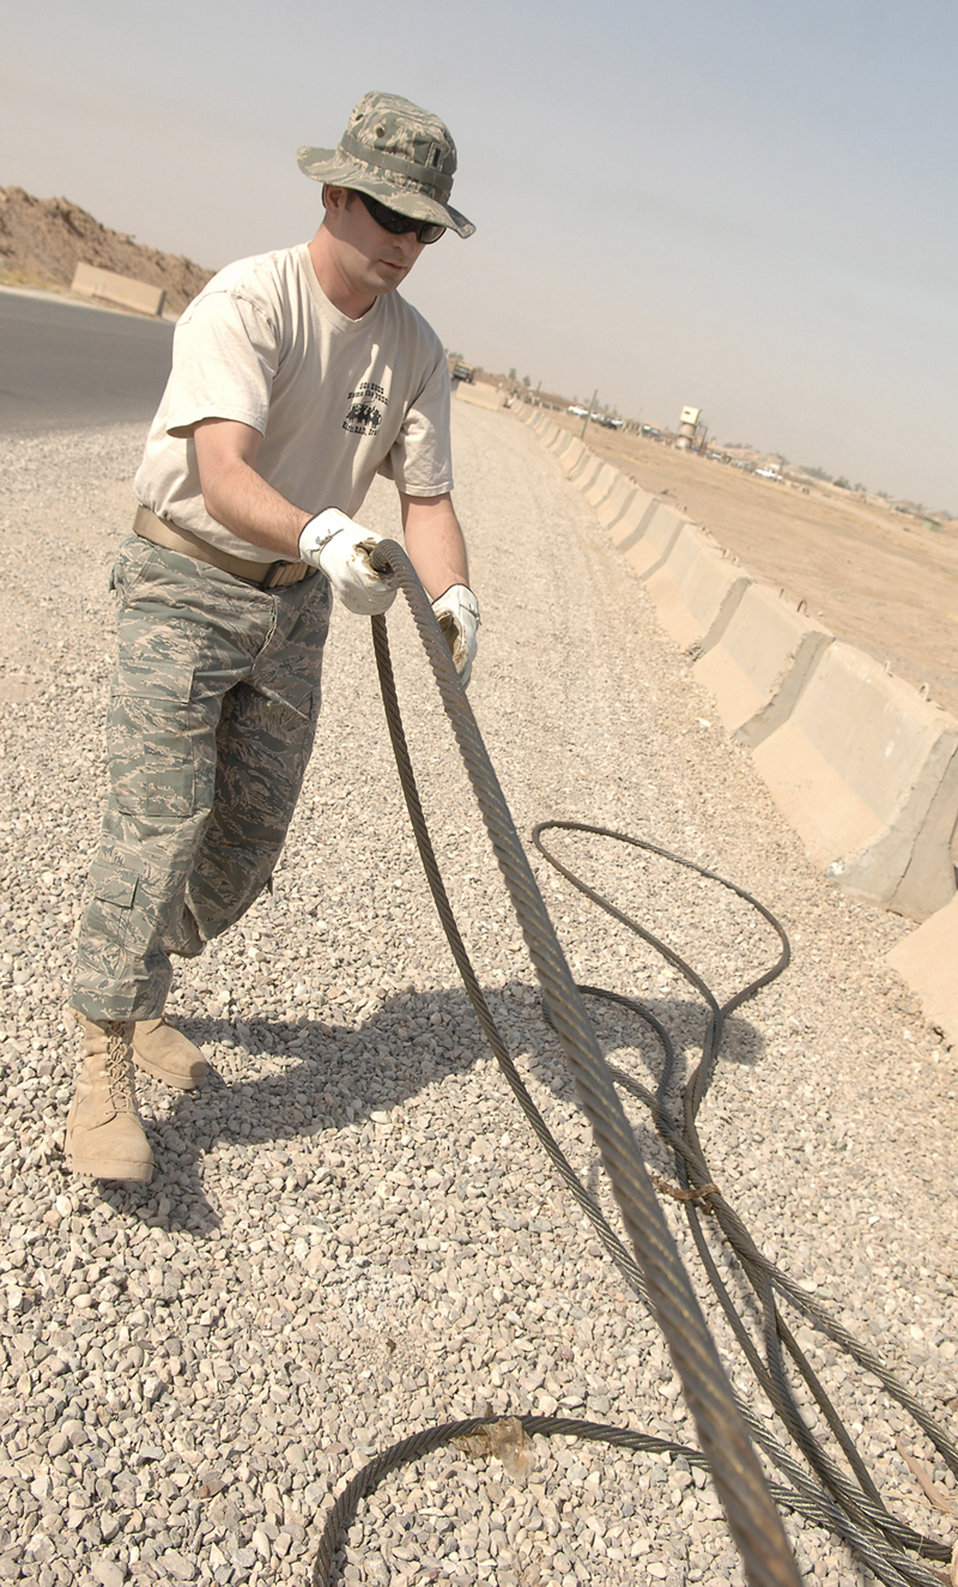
Volunteers create safety barrier

Near the Kirkuk Air Base, Iraq, flightline, 1st Lt. Sam Walker untangles aircraft cables June 5. Airmen teamed up to place barriers, cables and signs around the airfield to lessen safety risks. The project saved an estimated $500,000 by using existing assets and volunteers. Lieutenant Walker, a Miami native, is the 506th Expeditionary Operations Support Squadron airfield operations flight director, and is deployed from Key Field, Miss.